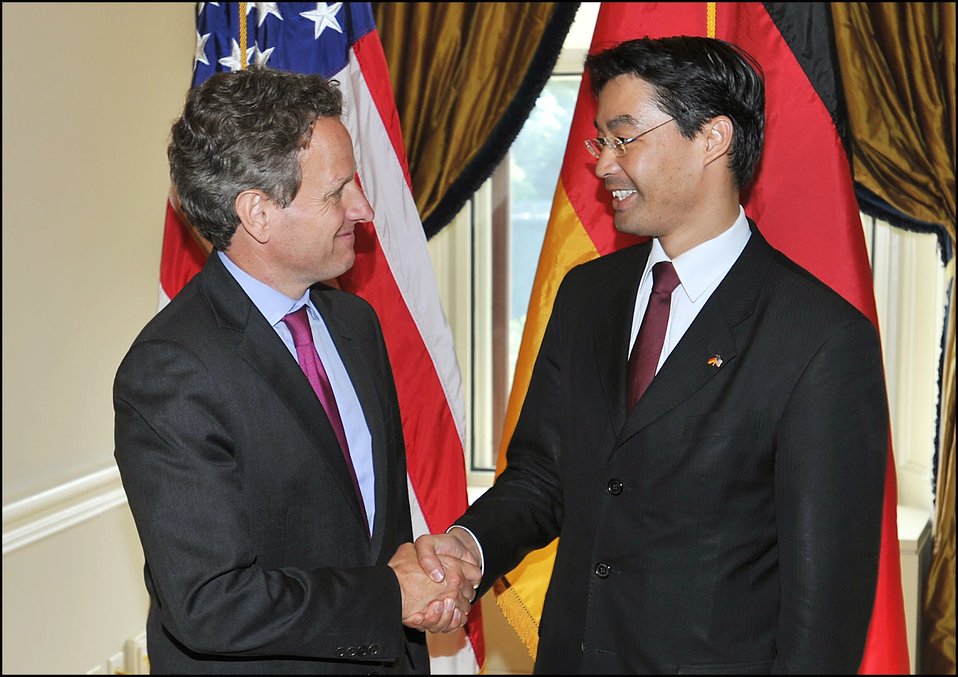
German Vice Chancellor and Minister of Economics and Technology Philipp Rösler

On Tuesday, June 7, 2011, Secretary Geithner met at Treasury with German Vice Chancellor and Minister of Economics and Technology Philipp Rösler, who is in Washington, DC with Chancellor Merkel.